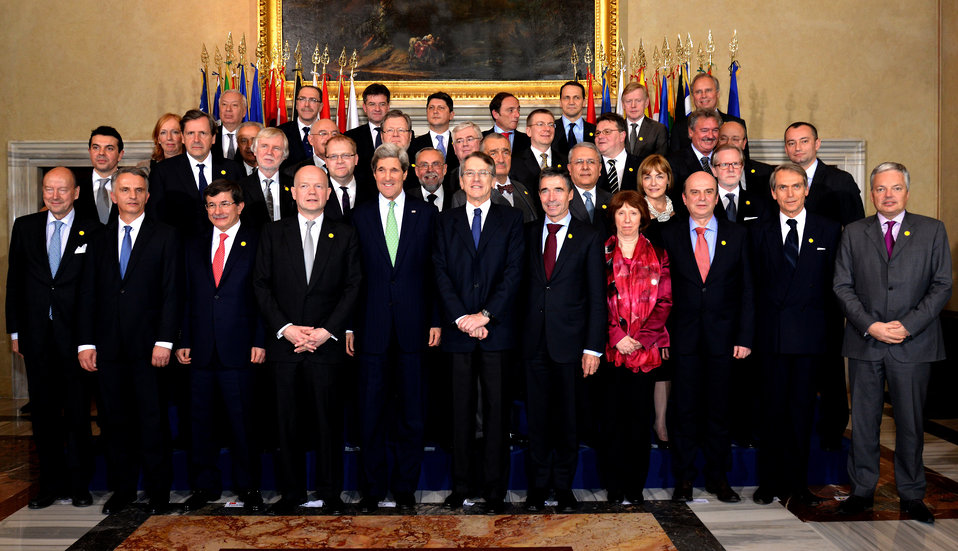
Secretary Kerry Poses for a Family Photo With European and NATO Leaders

U.S. Secretary of State John Kerry poses for a family photo with European and NATO leaders in Rome, Italy, on February 27, 2013.